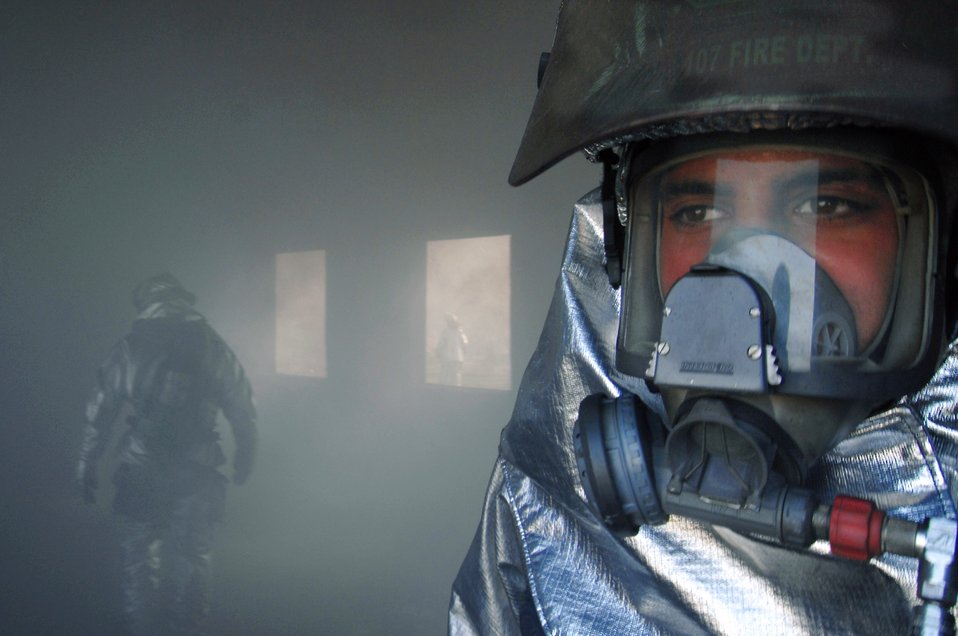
Don't let the smoke get in your eyes

Staff Sgt. Arthur Curcione conducts joint training Feb. 12 with Iraqi firefighters from the fire department at Baghdad International Airport. Sergeant Curcione is a firefighter with the New York Air National Guard's 107th Air Refueling Wing at Niagara Falls.